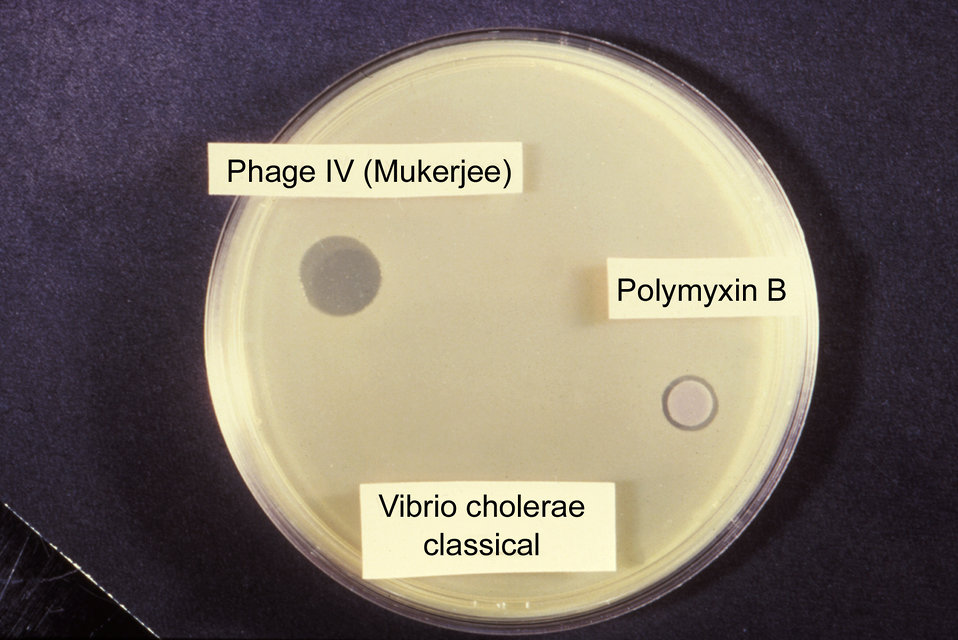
This was a classic sensitivity test for Vibrio cholerae involving Group IV bacteriophage and Polymyxin B.